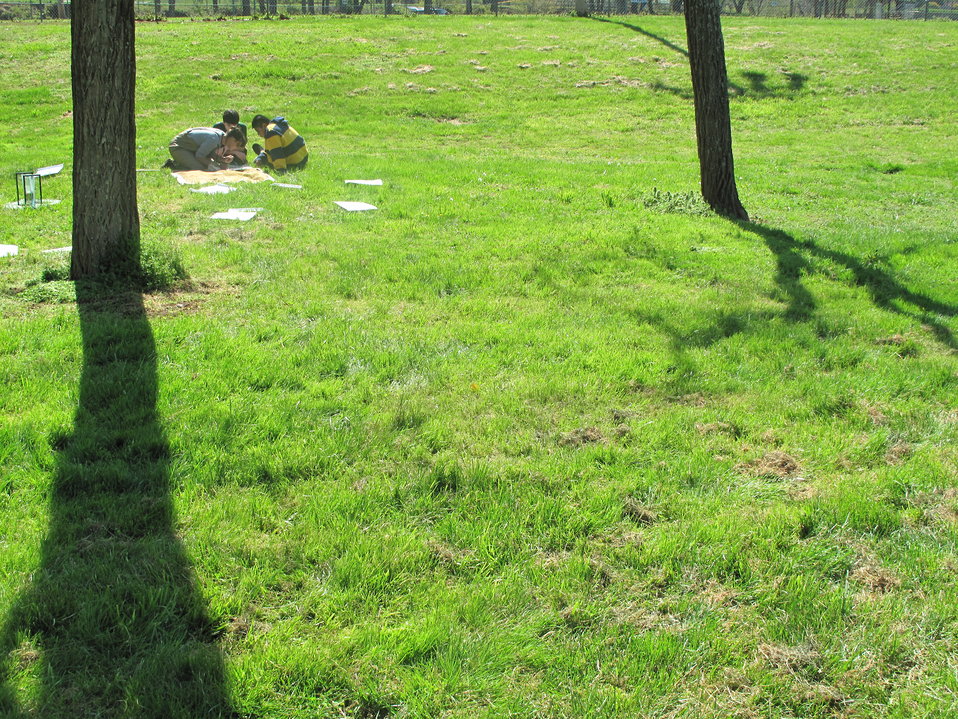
Students work to identify macroinvertebrates

Over the course of four days in late April 2014, every eighth grade student at North Carolina’s Macon Middle School, Highlands School, Nantahala School, and Trimont Christian Academy visited Cartoogechaye Park, in Macon County, to learn about rivers.

The students rotated through four stations:
1) water chemistry where they had the opportunity to help test water from Cartoogechaye Creek to gain an idea of the stream’s water quality;
2) aquatic insects, where students collected and identified animals like mayflies and caddisflies, learning how life in the river reflects the health of the river
3) fish, where they were able to collect and identify fish in the stream, and then
4) stream flow, where they measured and calculated the downstream movement of water, including the velocity of the water and the total volume of water being moved per second.

The event was organized by the University of Georgia's Coweeta Long-Term Ecological Research (LTER) Program, which is based at the USFS Coweeta Hydrologic Laboratory. (coweeta.uga.edu/), with sizable support from the Land Trust for the Little Tennessee. Other supporters include the U.S. Fish and Wildlife Service, N.C. Natural Heritage Program, and N.C. Division of Water Resources.